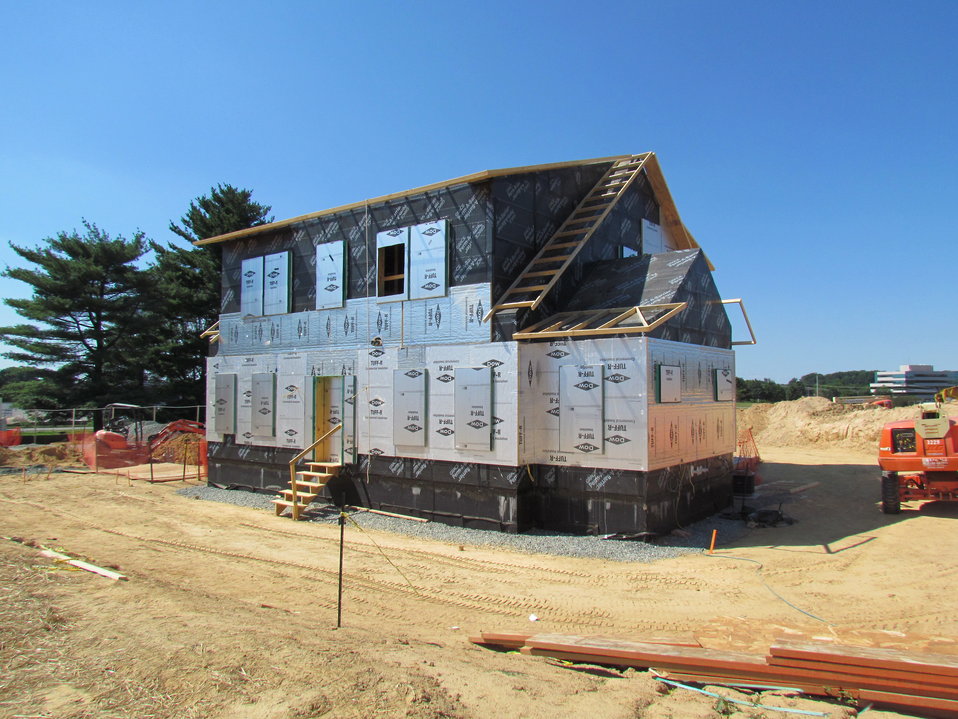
Net-Zero Energy Residential Test Facility - Photo showing facility with a portion of the overhang structure in place and partially installed foil-faced insulation on front and east side of facility.